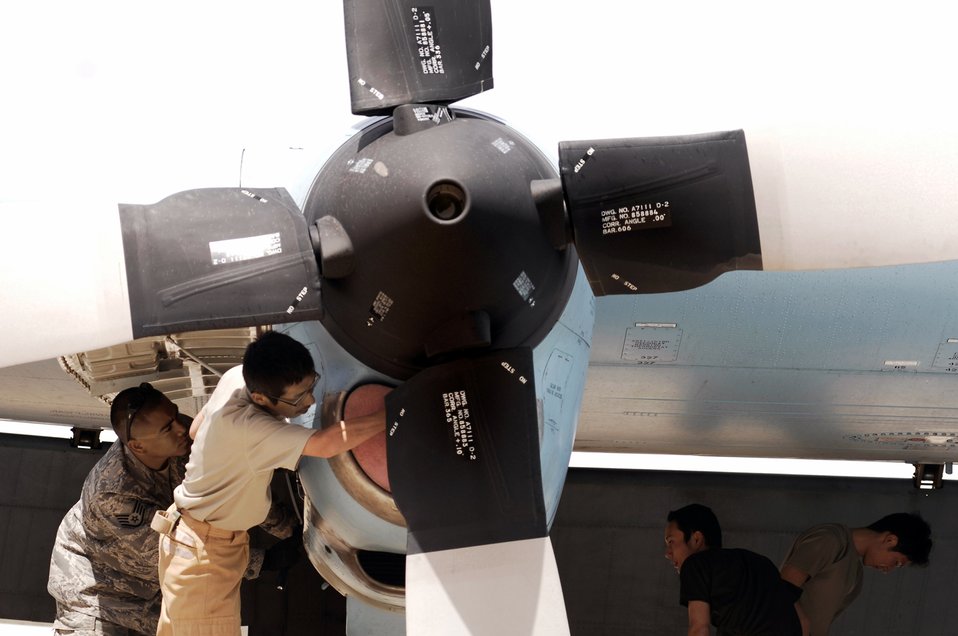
Coalition maintainers keep C-130 in the fight

Maintainers from the Japan Air Self-Defense Force Iraq Reconstruction Support Airlift Wing and Staff Sgt. Ray Pontemayor (left) inspect a Japan Air Self-Defense Force C-130 Hercules March 21 at a Southwest Asian air base. Airmen from the U.S., Japanese Air Self-Defense Force and South Korean air force's 58th Airlift Wing participated in a coalition maintenance exchange program allowing maintainers to sharpen their skills, exchange ideas, and promote closer relations among coalition air forces supporting the war on terrorism. Sergeant Pontemayor is a maintainer deployed to the 386th Expeditionary Aircraft Maintenance Squadron.